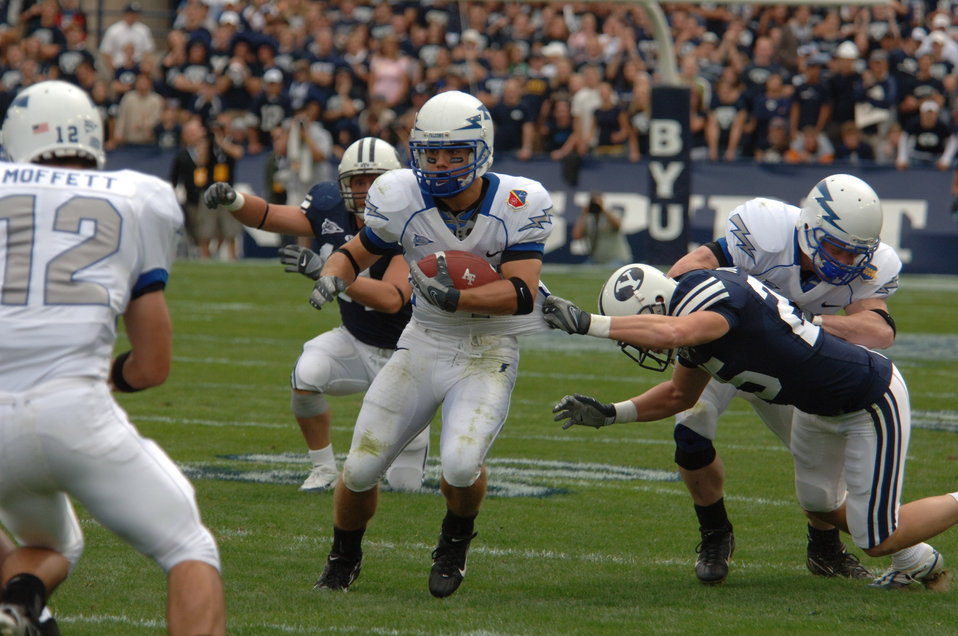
Falcons eye history after BYU loss, seeks redemption at Annapolis

Air Force wide receiver Chad Hall is grabbed by Brigham Young defensive back Quinn Gooch during BYU's 31-6 win Sept. 22 in Provo, Utah. Hall caught six passes for 80 yards and ran twice for 19 more.